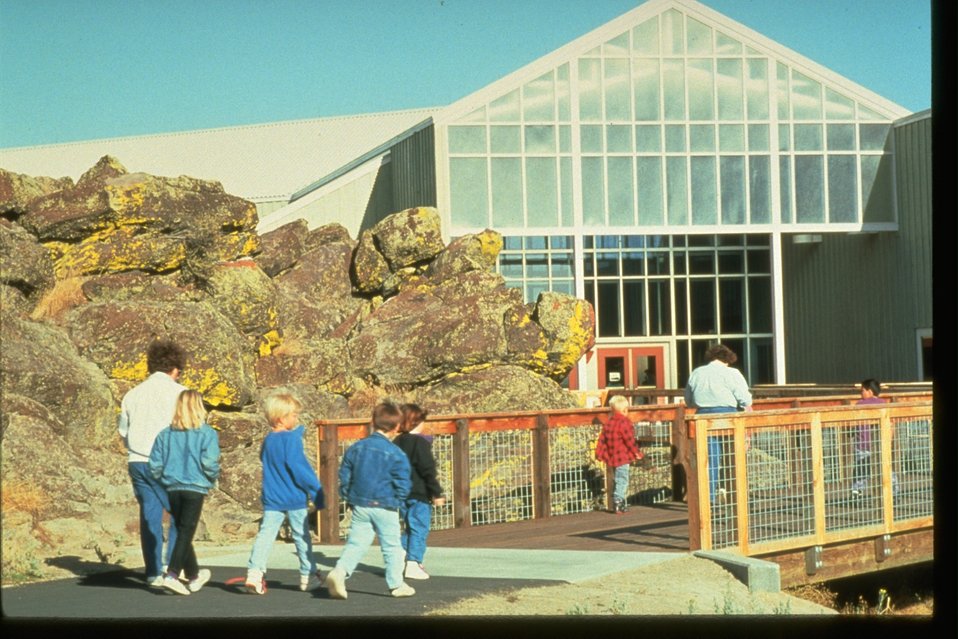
Front walk of the NHOTIC.